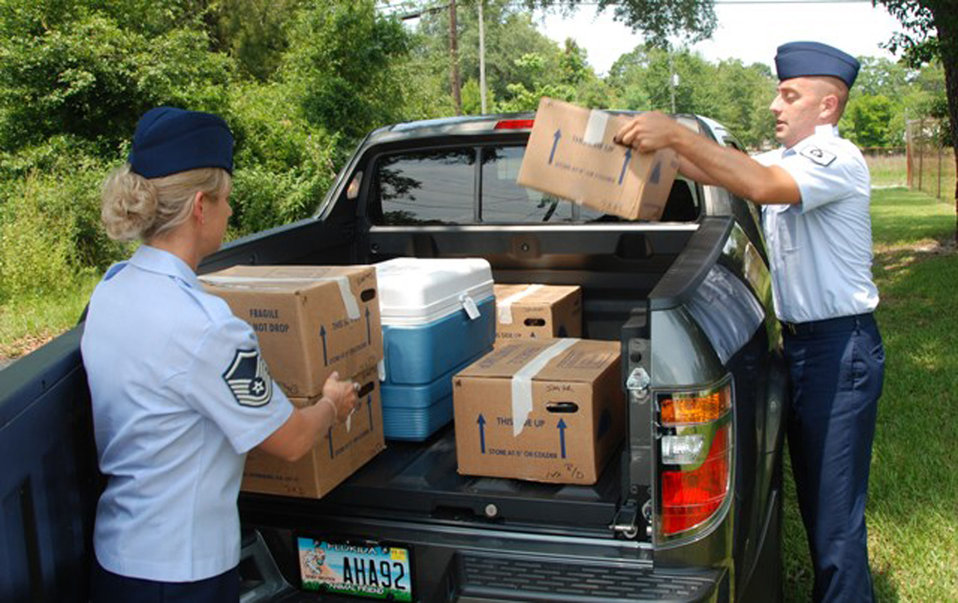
Tyndall Airmen participate in Meals on Wheels program

Master Sgt. Wendy Gehri and Tech. Sgt. Joe Ezell, members of the 601st Air and Space Operations Center at Tyndall Air Force Base, Fla., unload meals on their Meals on Wheels route as a part of a local Bay County Council on Aging program.